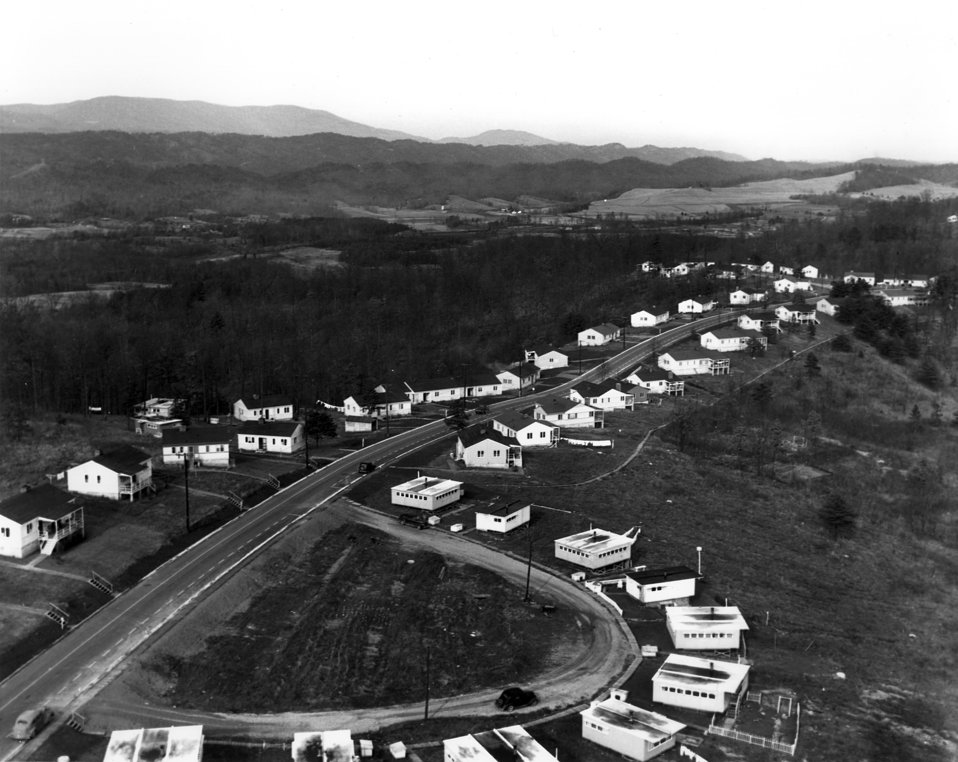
View From Water Tower of Homes in Oak Ridge

3203-5 DOE photo by Ed Westcott View From Water Tower of Homes in Oak Ridge Tennessee 12-3-1946